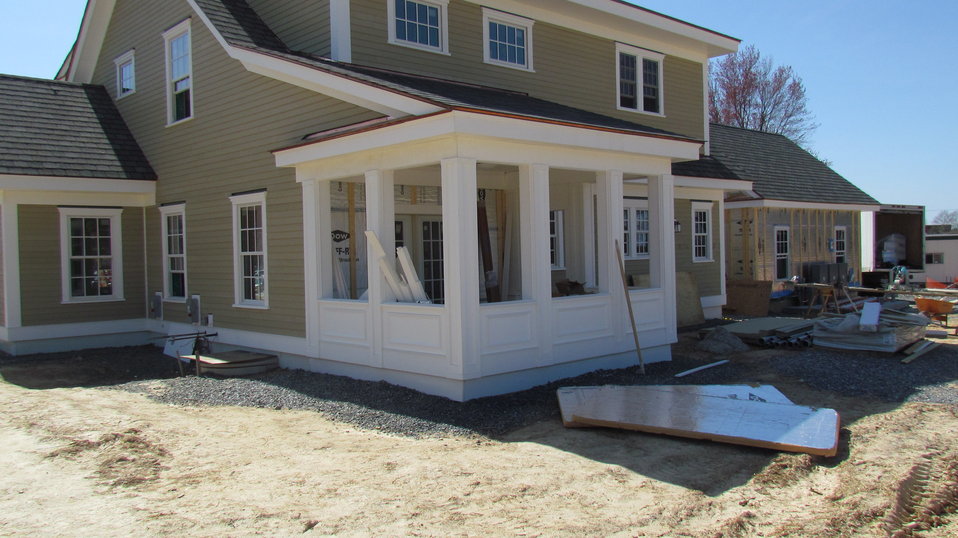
Siding installation completed on rear and west side of facility.